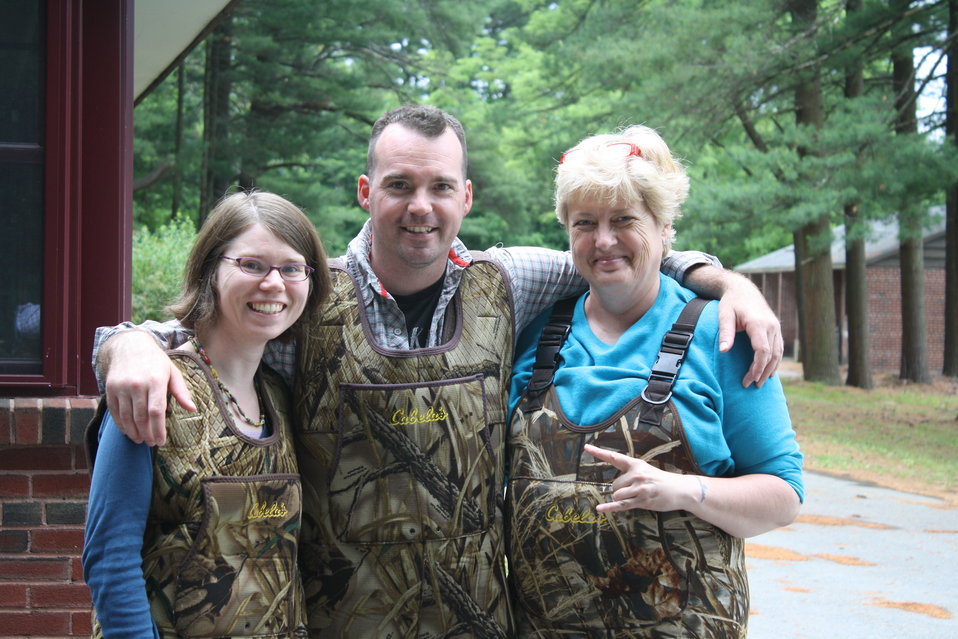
Nashua National Fish Hatchery welcomes regional office employees

Service staff in waders.